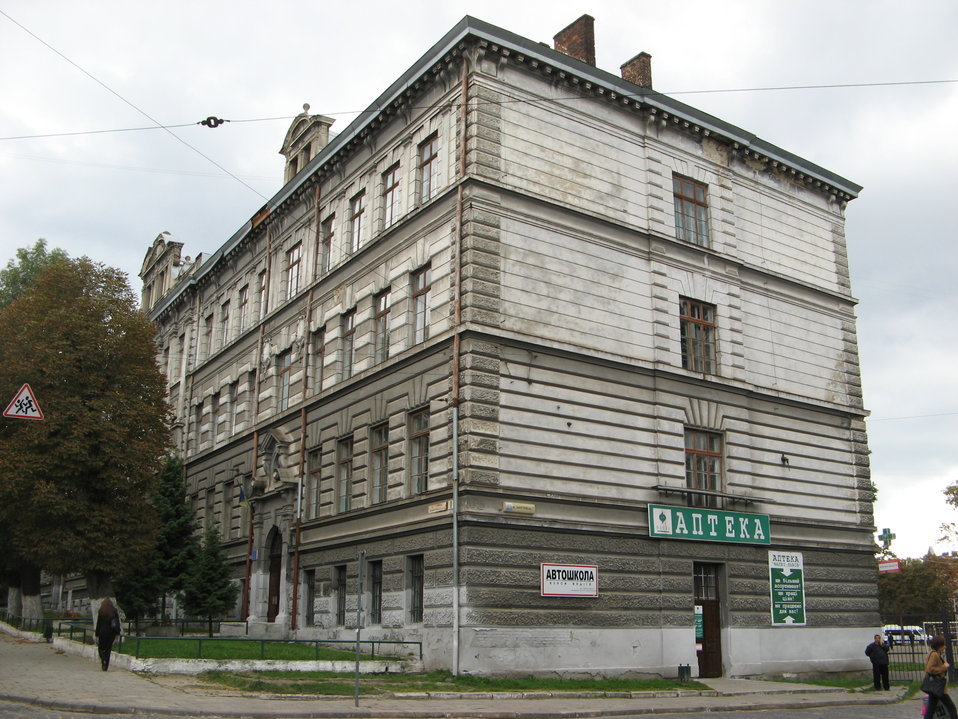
Українська: 11, вул. Замарстинівська (Львів).JP: 11, вул. Замарстинівська (Львів)